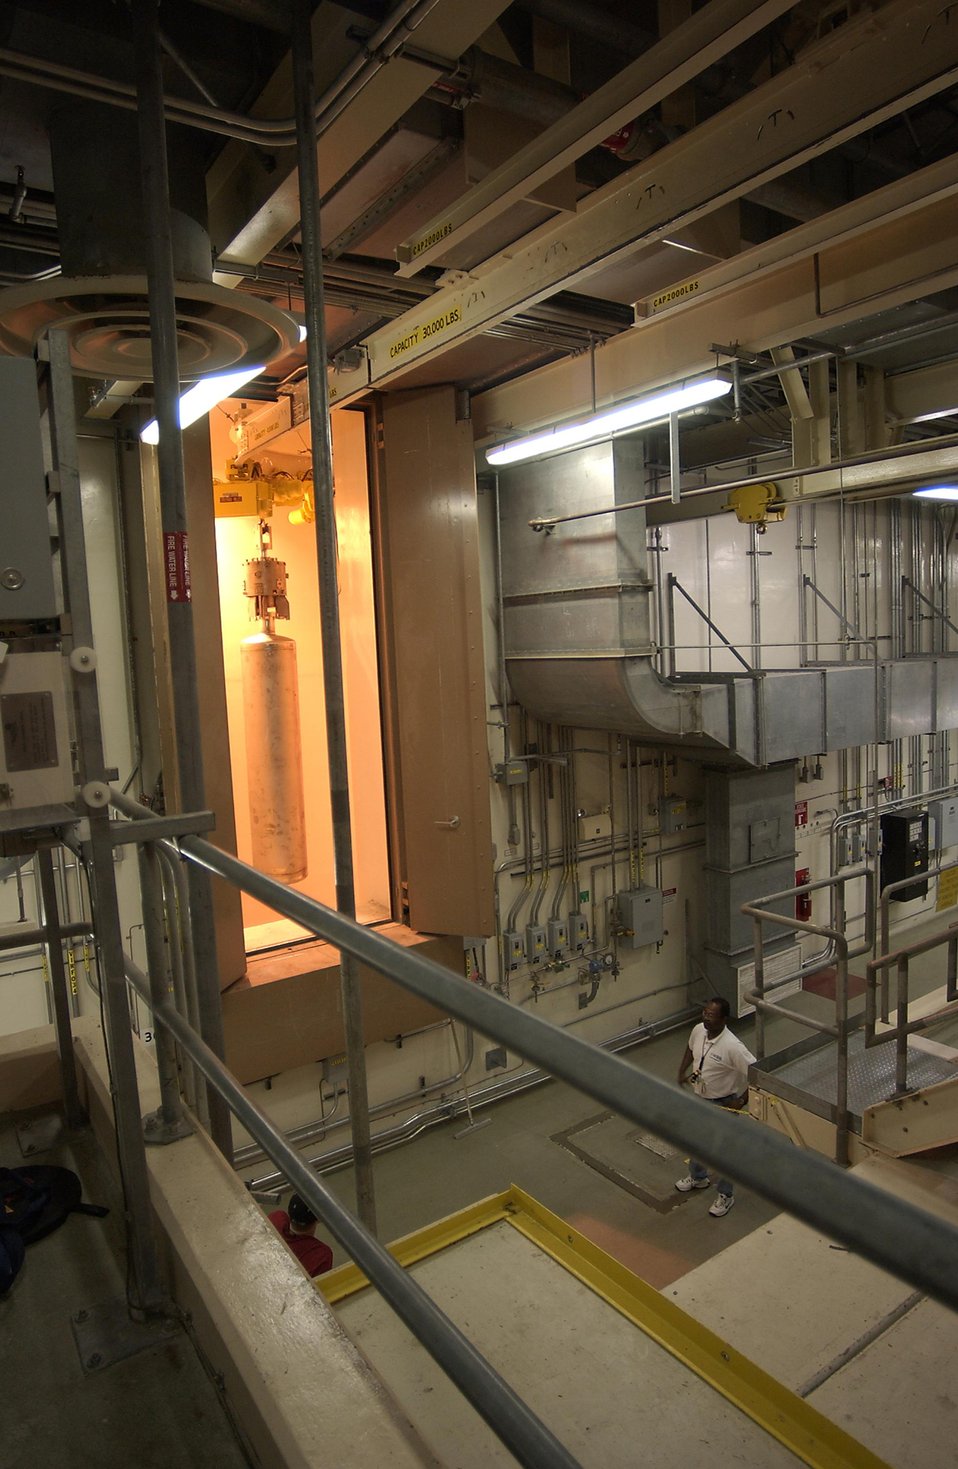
AN EMPTY CANISTER BEING PUT INTO POSITION TO MAKE ITS WAY THROUGH THE VITRIFICATION PROCESS.

SAVANNAH RIVER SITE'S DWPF IS DESIGNED TO CONVERT HIGH LEVEL LIQUID DEFENSE NUCLEAR WASTE INTO BOROSILICATE GLASS, A STABLE FORM SUITABLE FOR STORAGE, TRANSPORTATION AND REPOSITORY STORAGE. THE WASTE TO GLASS PROCESS IS KNOWN AS VITRIFICATION. THE RADIOACTIVE WASTE IS FUSED WITH SAND AT A TEMPERATURE OF 2,000 DEGREES IN A LARGE CRANE OPERATED STEEL MIXER, POURED INTO STAINLESS STEEL CANISTERS TO HARDEN INTO A BLACK GLASS. THE SEALED CANISTERS ARE STORED VERTICALLY IN SLOTS ON A CONCRETE SLAB UNTIL THEY CAN BE MOVED TO A SAFE REPOSITORY.